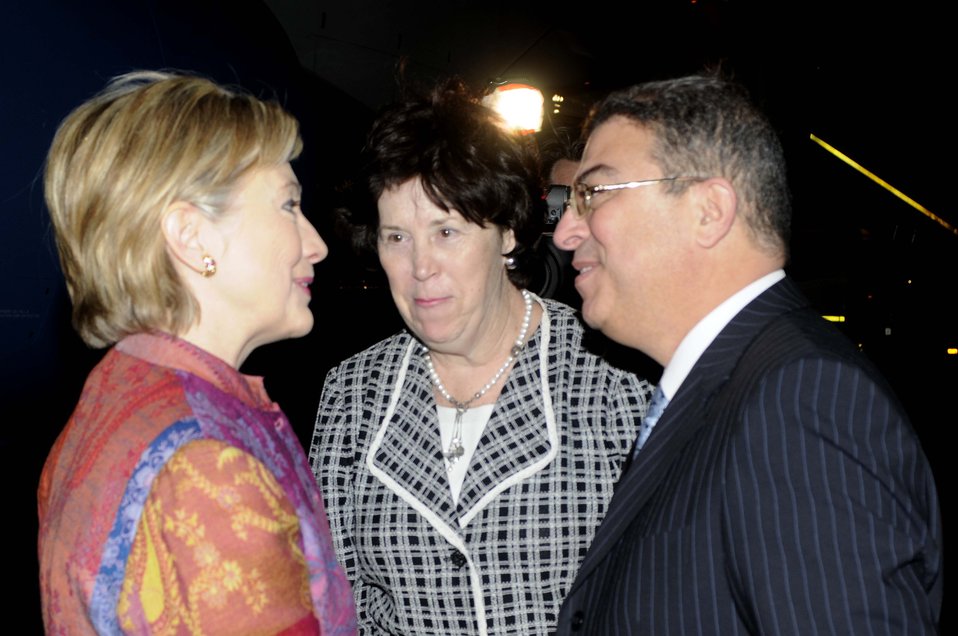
Secretary Clinton Arrives in Egypt

Secretary Clinton, U.S. Ambassador to Egypt Margaret Scobey and Ambassador Ibrahim Hairat, Assistant Minister of Foreign Affairs and Chief of Protocol, Arab Republic of Egypt in Sharm el-Sheikh, Egypt March 1, 2009.